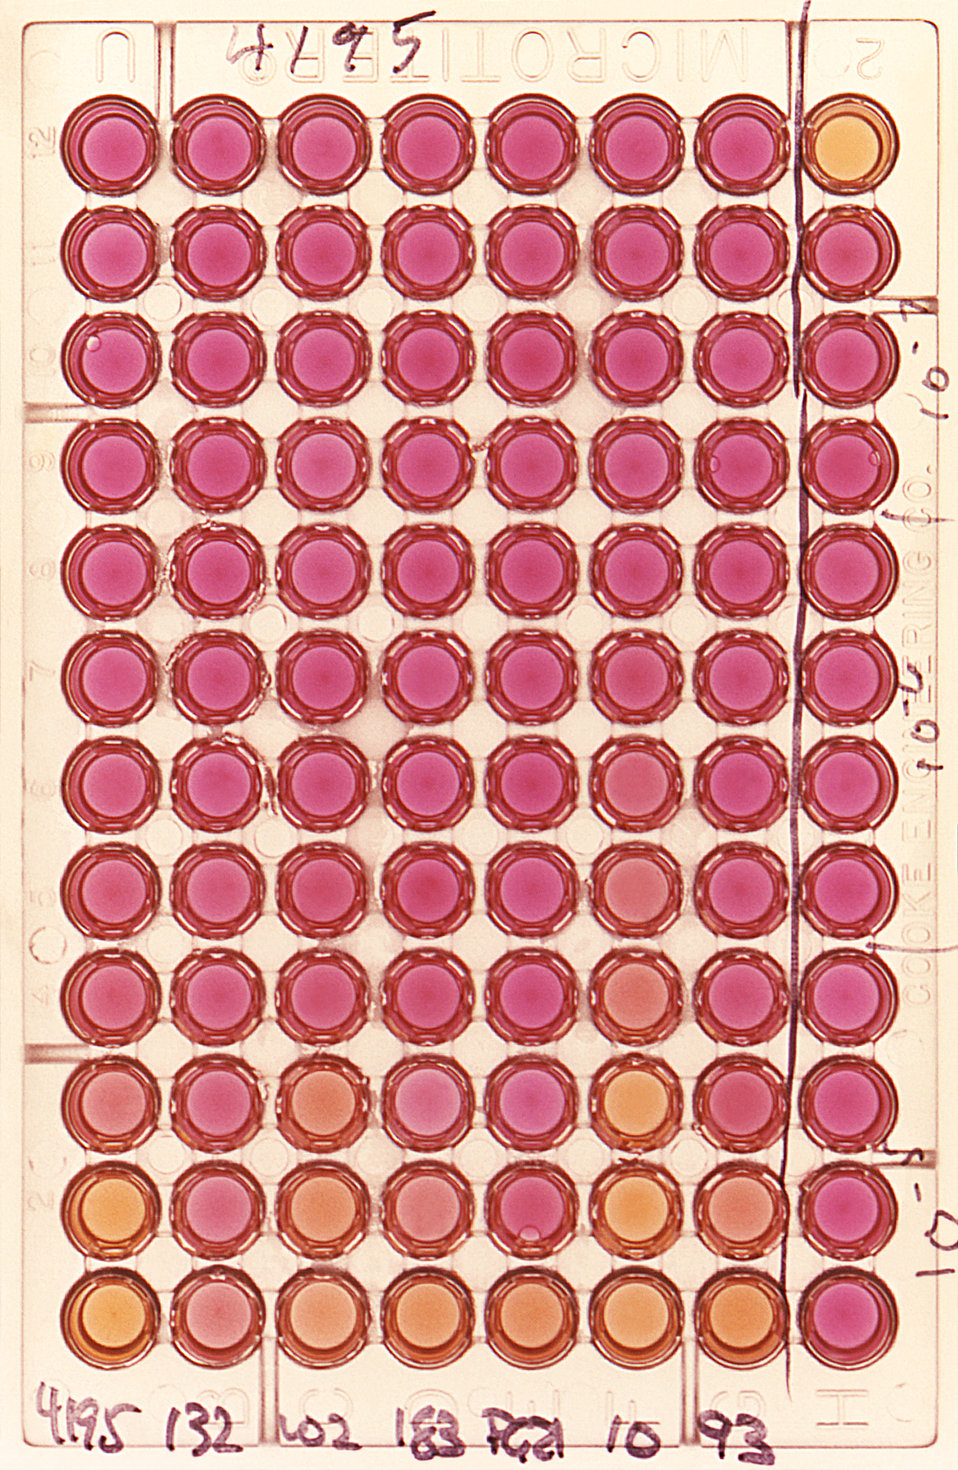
This photograph depicted the results of a metabolic inhibition (MI) test, which compared the relatedness of Mycoplasma hominis, strain 4195, to that of other, unidentified strains of M. hominis.